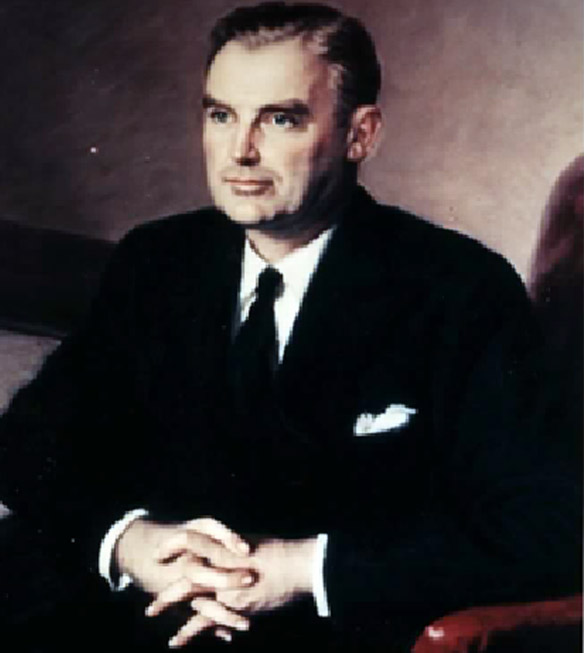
W. Stuart Symington was the first secretary of the Air Force and served from Sept. 18, 1947 to April 24, 1950.